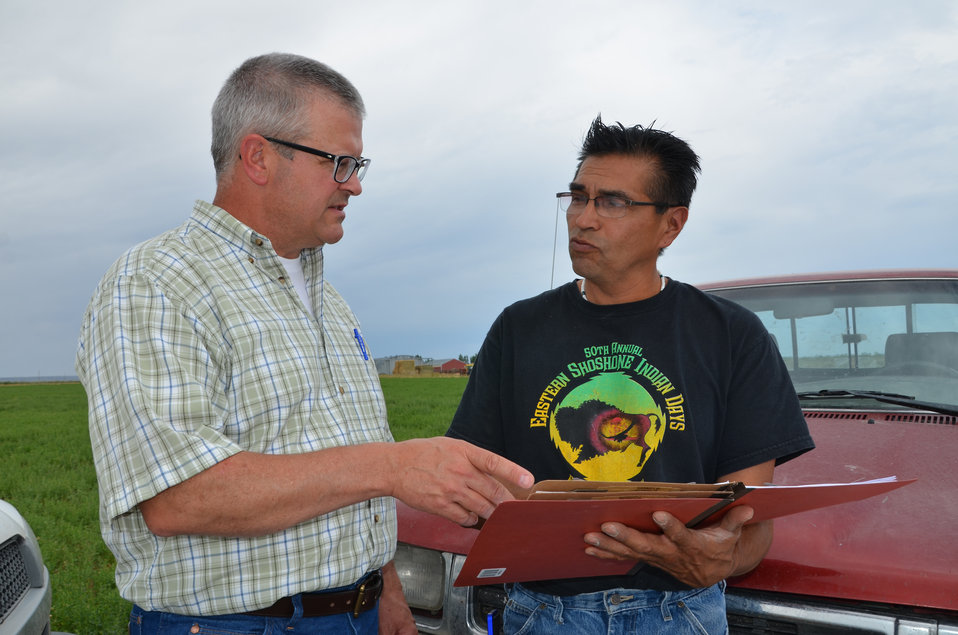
Strike Force Ranch 4

U.S. Department of Agriculture (USDA) Natural Resource Conservation Service (NRCS) rangeland management specialist Chuck Peterse and Shoshone-Paiute Tribal member Reggie Premo discuss future conservation plans on Premo’s ranch located on the Duck Valley Reservation in Nevada.